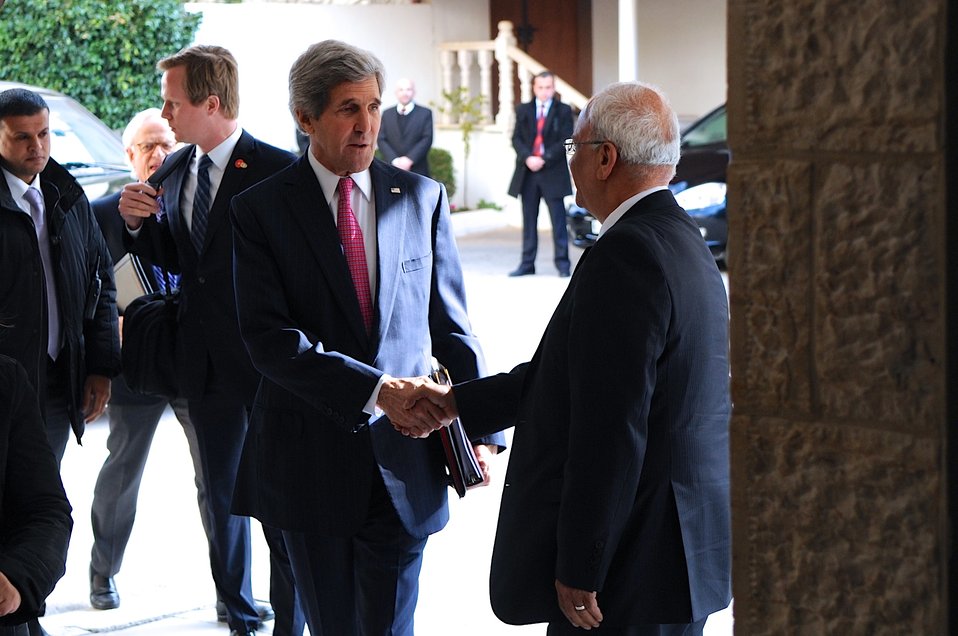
Secretary Kerry, Negotiator Erekat Greet Each Other in West Bank

Palestinian Authority Lead Negotiator Saeb Erekat greets U.S. Secretary of State John Kerry as he arrives at the Muqata'a Presidential Compound in Ramallah, West Bank, on January 4, 2013, for Middle East peace negotiations.